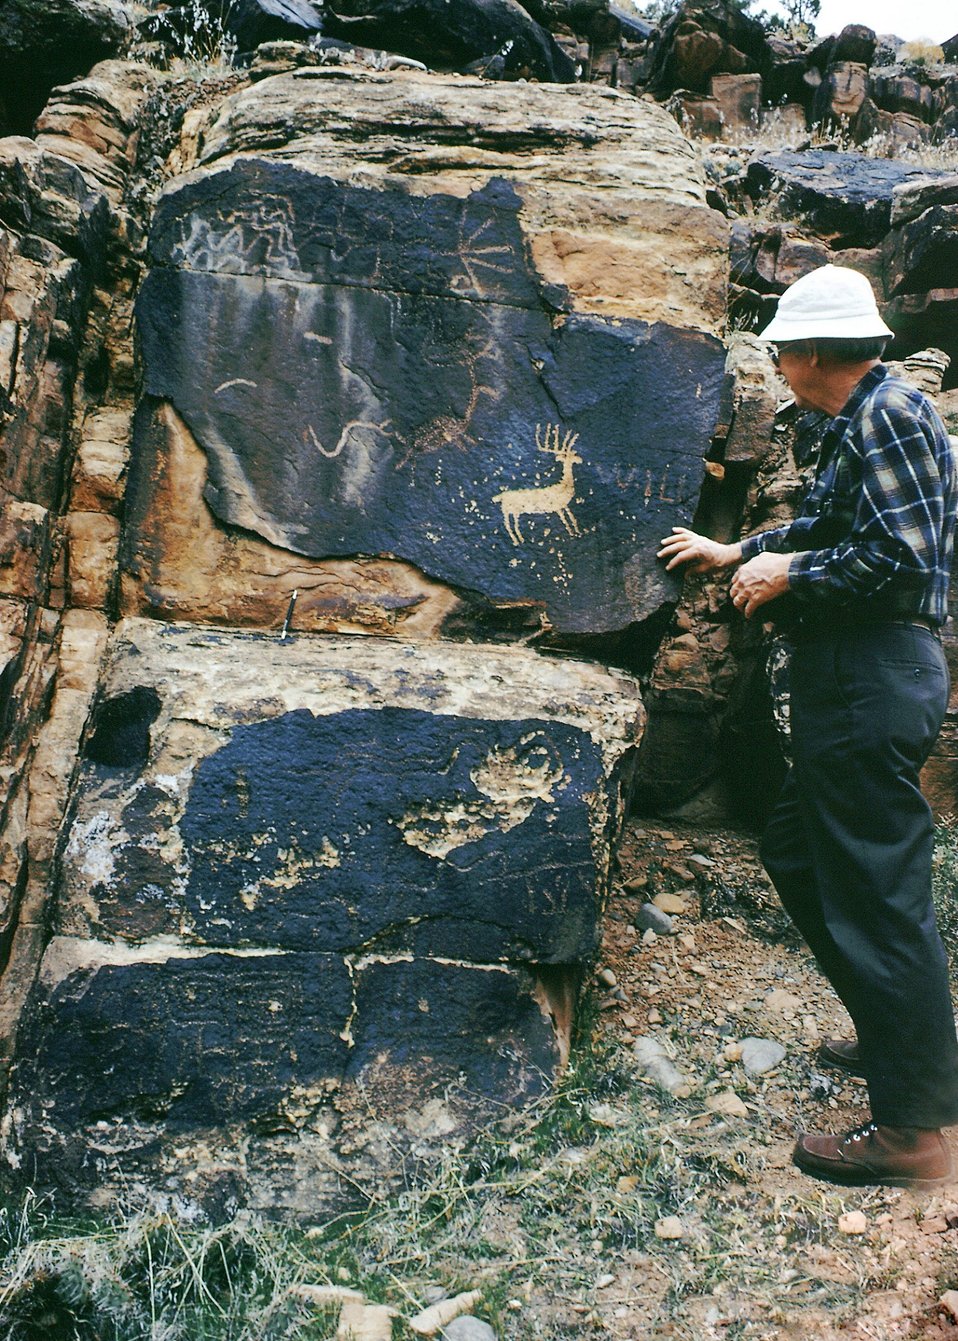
Potograph Smith Forks